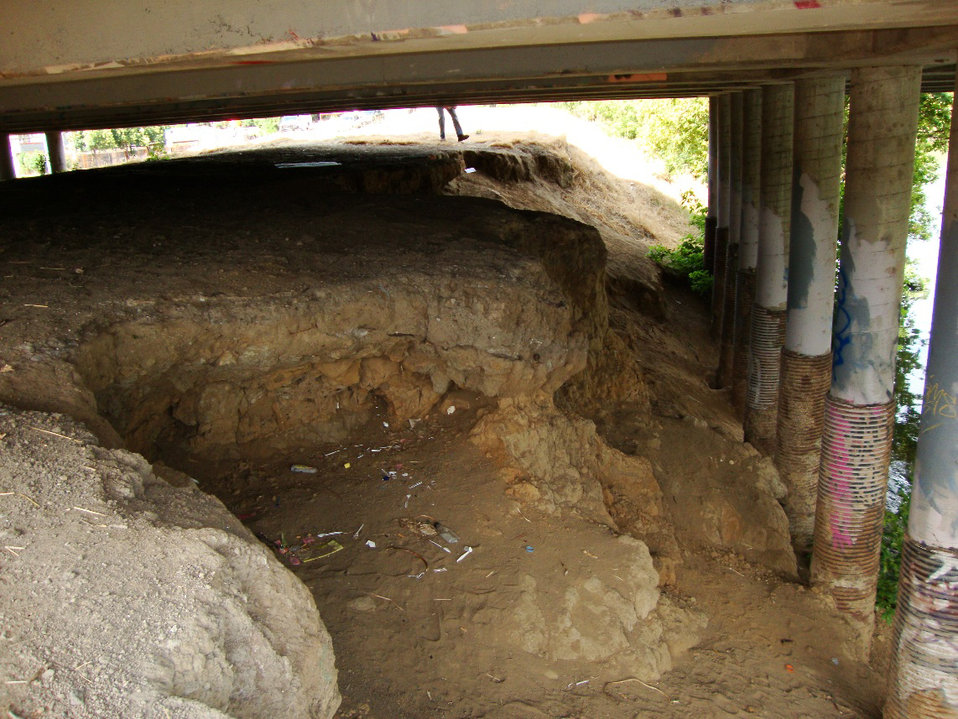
Levee erosion in the Stockton area

Levee erosion in the Stockton, Calif., area, shown during a levee inspection in 2010. The U.S. Army Corps of Engineers inspects levees in its Rehabilitation and Inspection Program to ensure levees don’t pose an unacceptable risk to lives and to provide levee managers and residents with detailed information on the condition of levees to help them make informed decisions about safety.